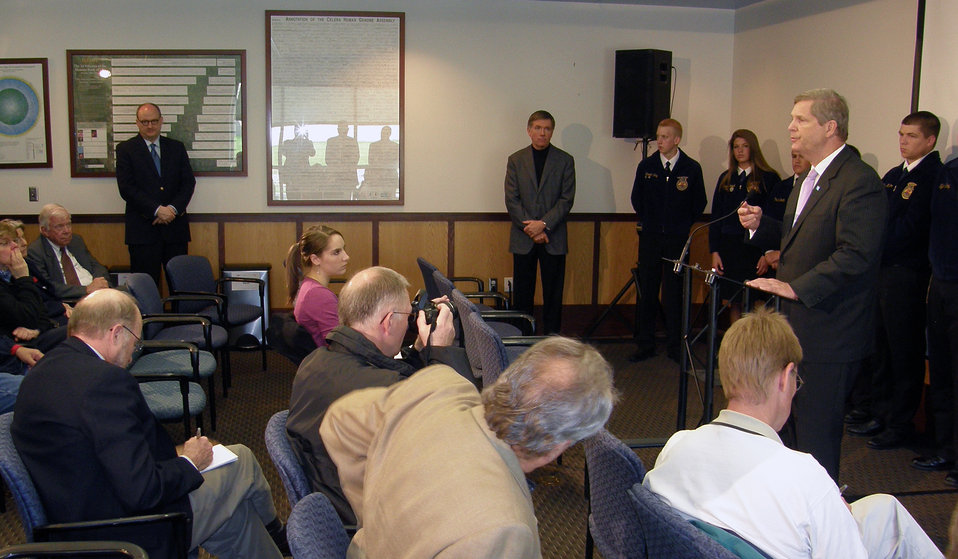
Agriculture Secretary Tom Vilsack spoke to Kemin Industries employees and FFA students from central Iowa in Des Moines, IA on Friday, April 20, 2012. Kemin Industries is an innovative bioscience company that is using plant-based materials to manufacture ingredients used in dietary supplements and in personal care products.